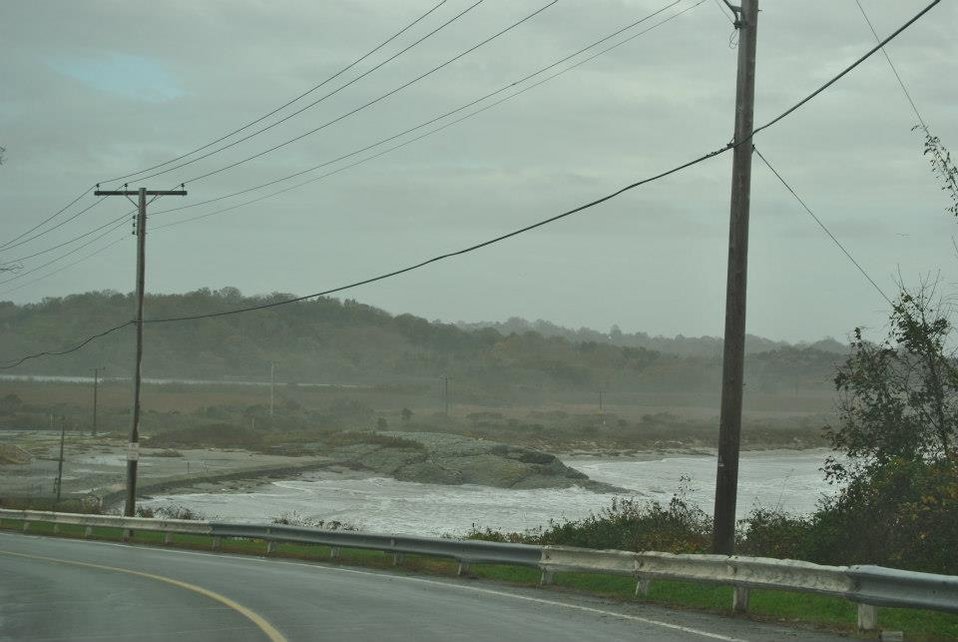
Sachuest Point Road - Oct. 30 (RI)

Looking at Sachuest Point Road and Surfer's End from Purgatory Ave. - Tuesday, 10/30